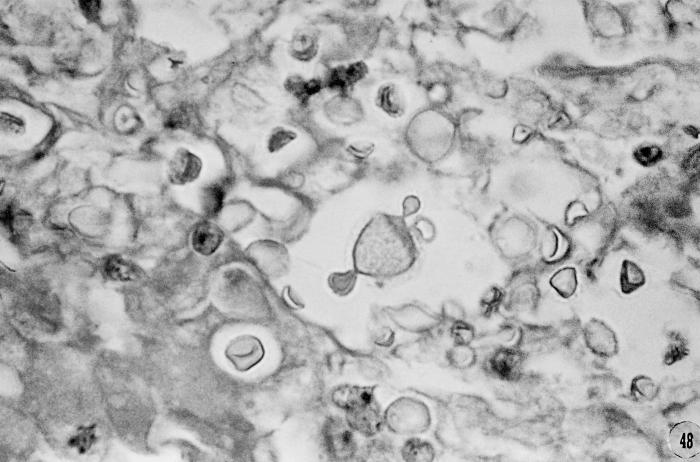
This photomicrograph depicted numbers of Cryptococcus neoformans fungi, the etiologic agents responsible for the disease 'cryptococcosis'. This slide was created from a lung specimen, and stained using the hemotoxylin and eosin (H&E) staining technique.